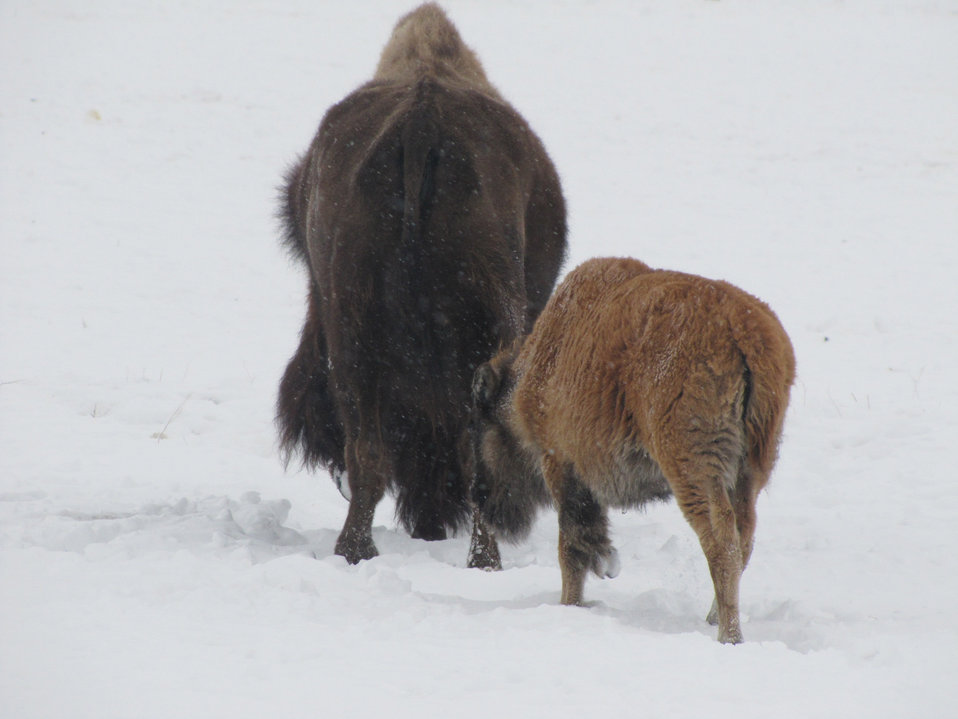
Sticking Close

A bison calf sticks close to its mother on a snowy, gray February morning.